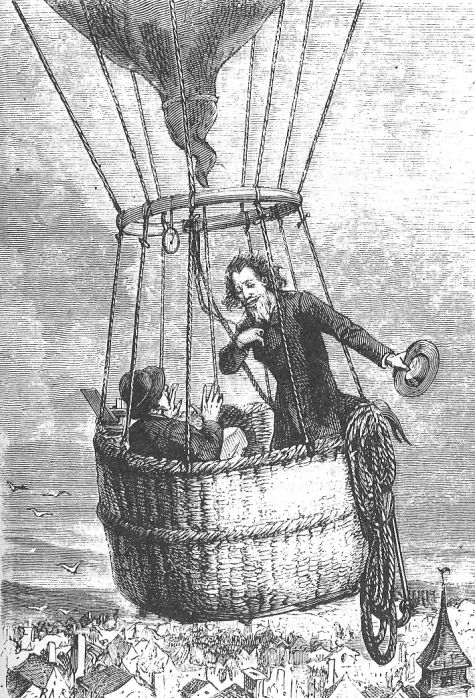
An illustration from Jules Verne's short story 'A Drama in the Air' (1851) drawn by √âmile-Antoine Bayard. Polski: Ilustracja opowiadania Juliusza Verne'a 'Dramat w balonie' (tytu≈Ç by≈Ç przek≈Çadany tak≈ºe jako 'Dramat w przestworzach', 1851) autorstwa √âmile-Antoine Bayarda. Fran√ßais†: Jules Verne: 'Un Drame dans les airs', par √âmile-Antoine Bayard. Orginal description taken from the book: Fran√ßais†: ¬´†Monsieur, je vous salue bien†!†¬ª me dit-il‚Ä¶